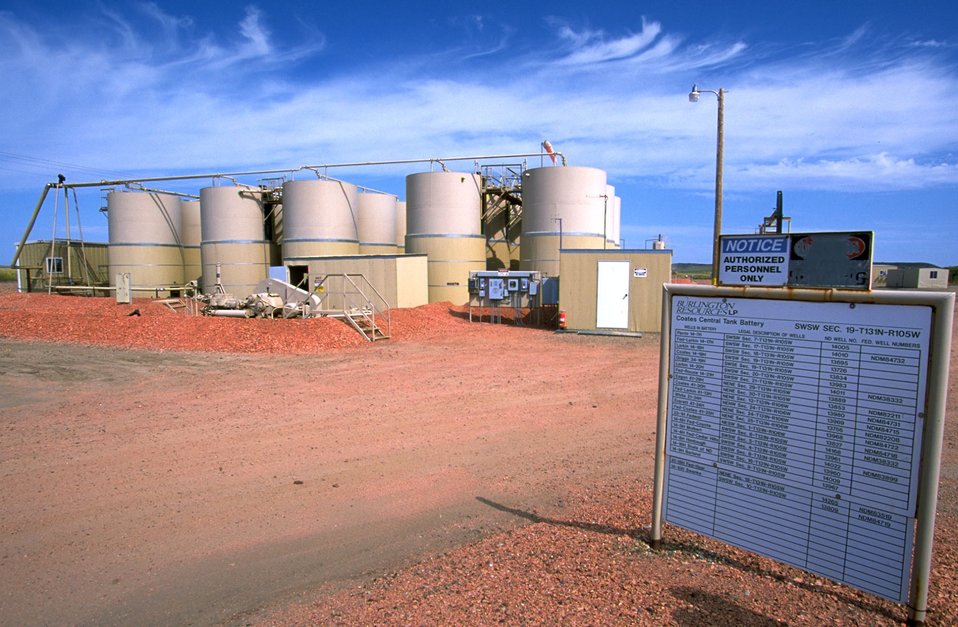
Central tank battery with sign listing all wells feeding this battery